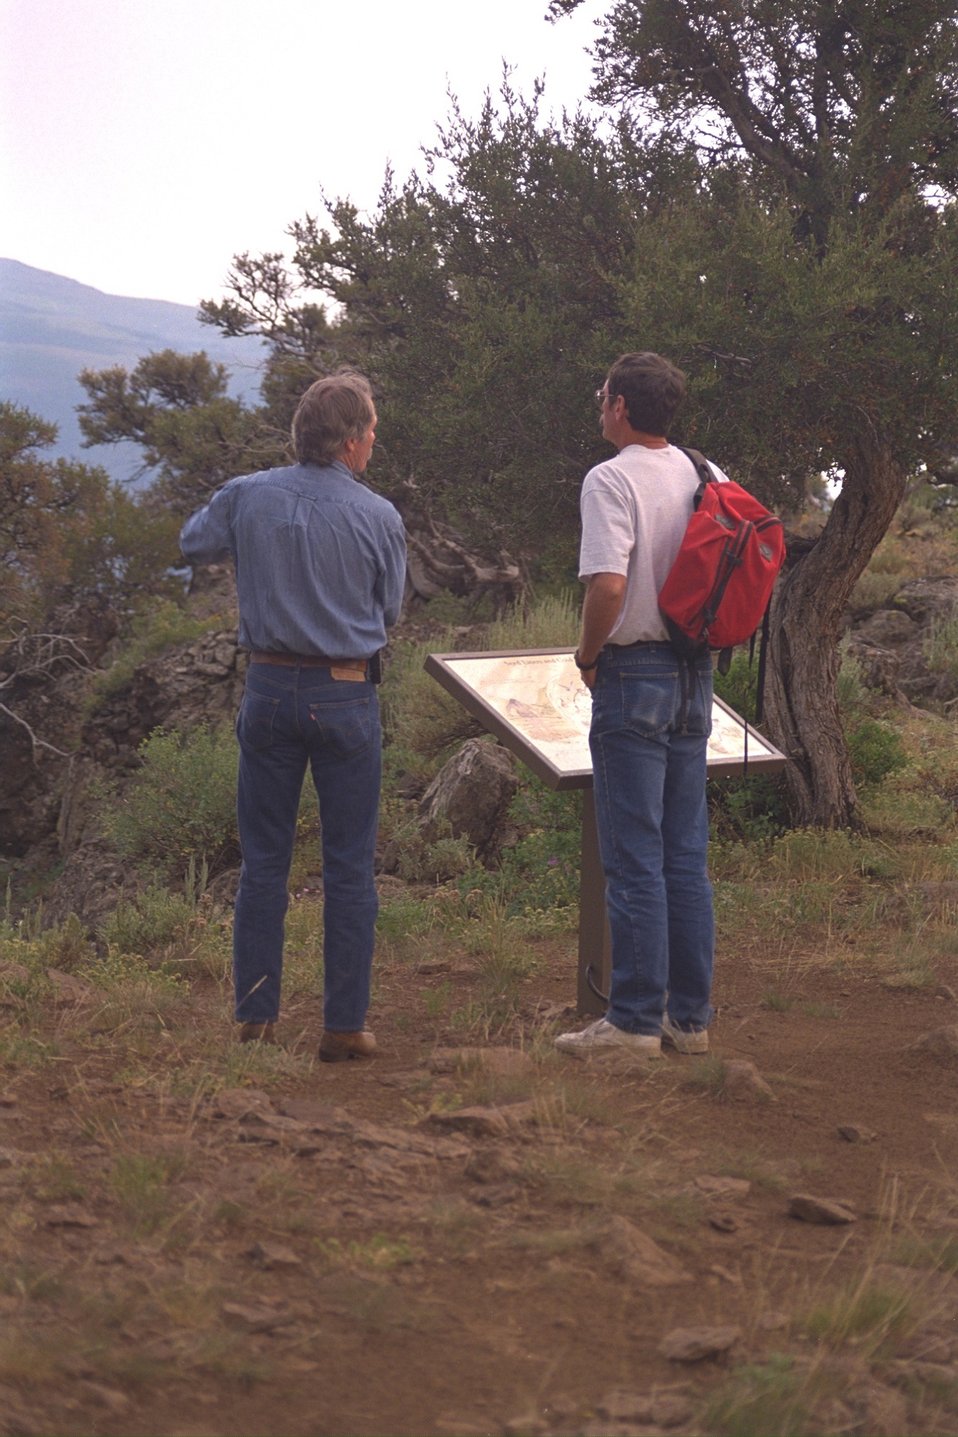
Governor Kitzhaberand Rich Hall, a Burns District Botanist, at Big Indian Overlook Interpretive Panel.